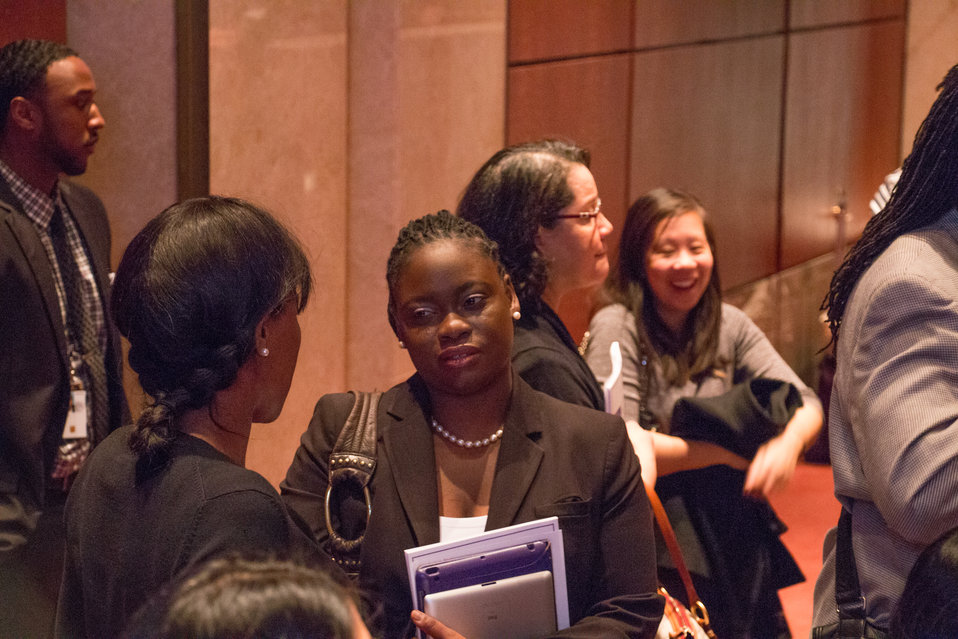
VHAP Launch (365 of 511)